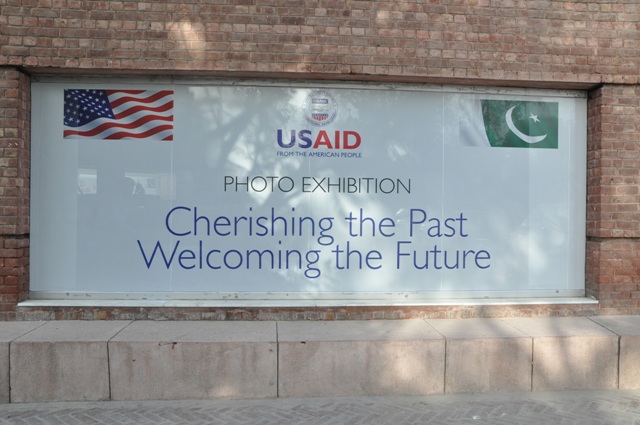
Outside the Alhamra Art Gallery